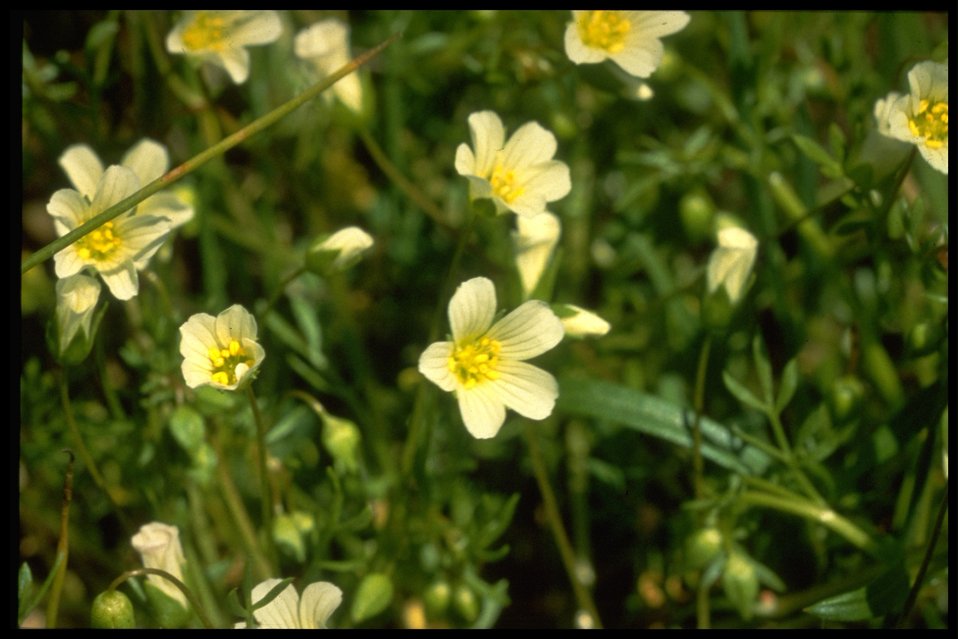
Limnanthes gracilis var. gracilis, also commonly known as Slender Meadow Foam.